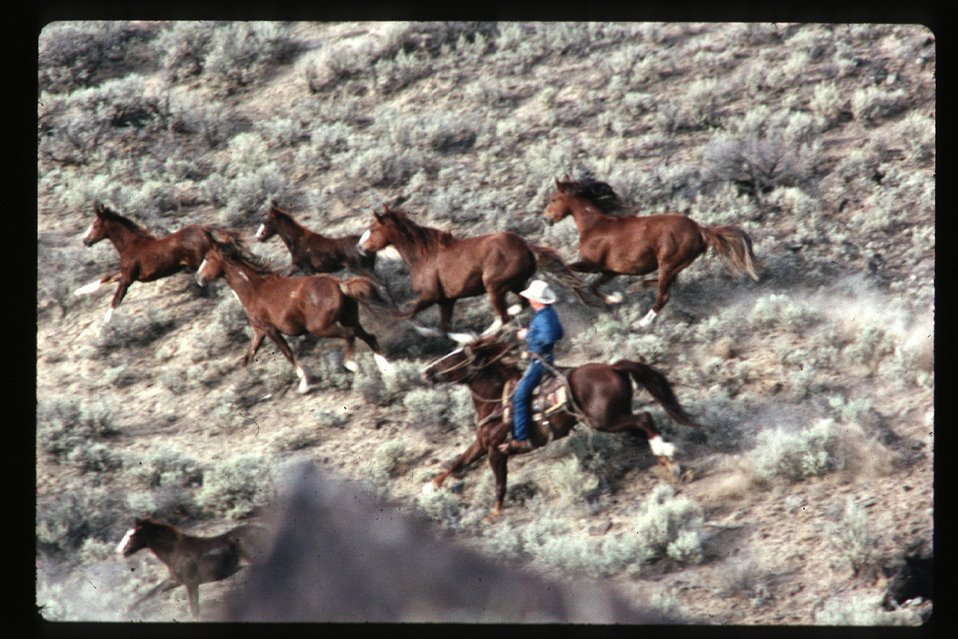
Wild horse roundup Wild Horse and Burro Adoption Program LSRD Lower Snake River District